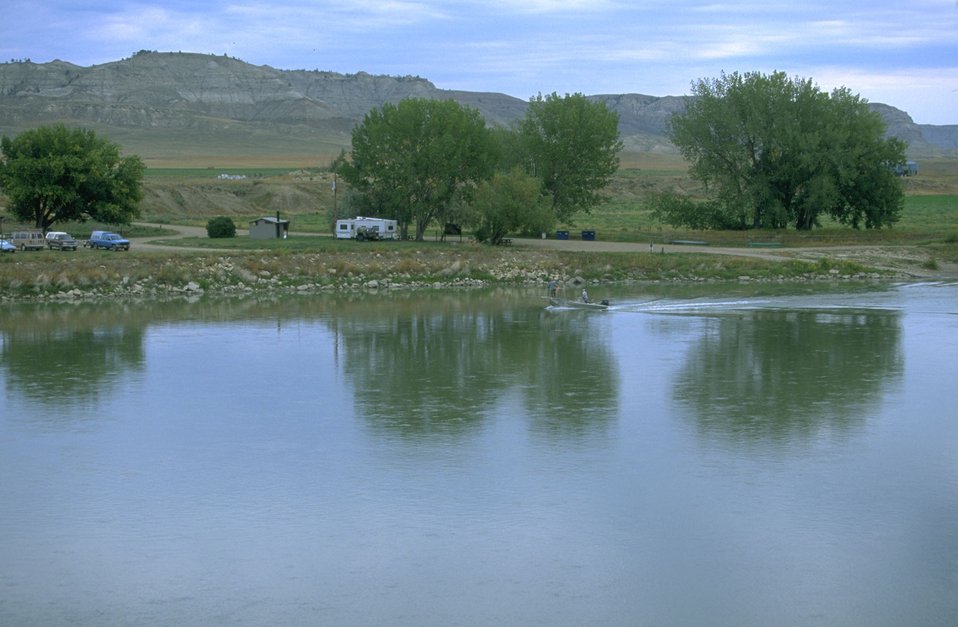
Judith Landing along Upper Missouri National Wild and Scenic River